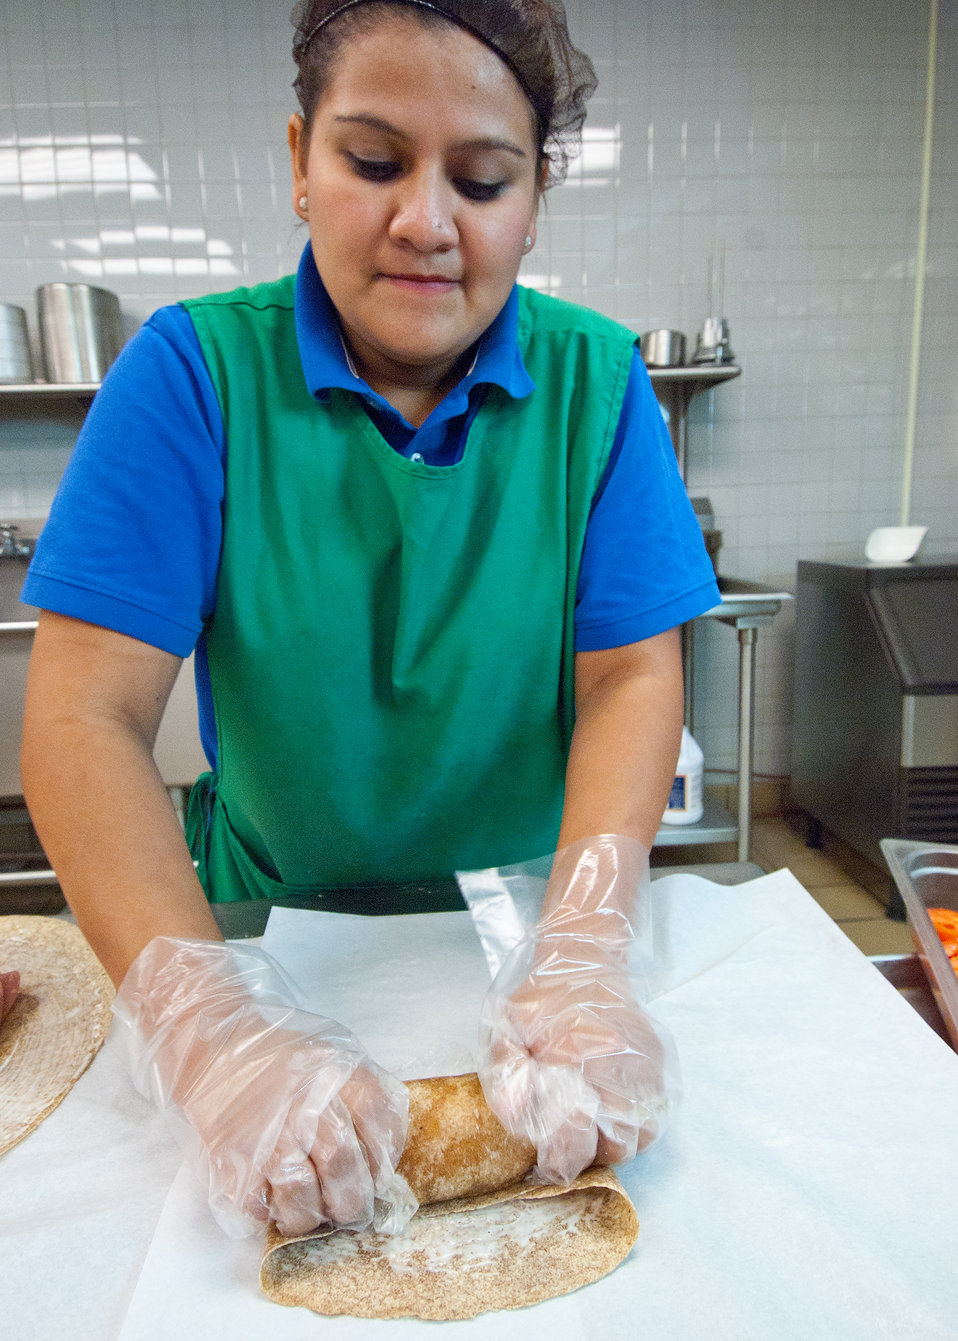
Candy Flores, Arlington Food Services prepares ham and cheese wraps for the National School Lunch Program in the kitchen at Washington-Lee High School in Arlington, Virginia, on Wednesday, October 19, 2011. The National School Lunch Program is a federally assisted meal program administered by the United States Department of Agriculture, Food and Nutrition Service operating in public, nonprofit private schools and residential child care institutions. It provides nutritionally balanced, low-cost or free lunches to children each school day.